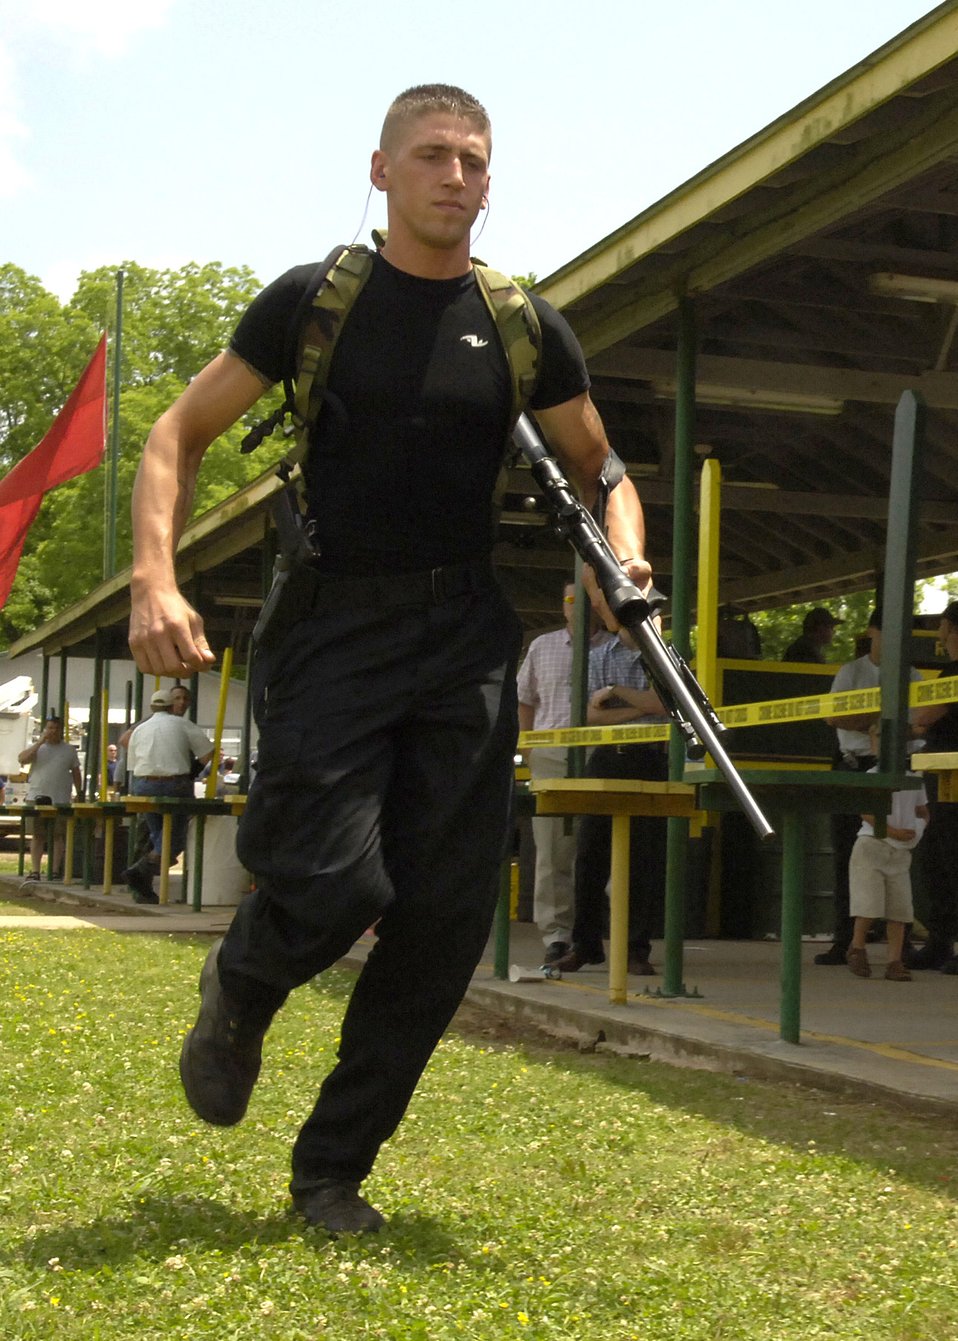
Security forces Airmen at SWAT competition

Staff Sgt. Lucas Gutowski proceeds to the sniper event during the Louisiana State SWAT Team Competition in Alexandria, La., on Tuesday, May 2, 2006. Sergeant Gutowski is with the 2nd Security Forces Squadron at Barksdale Air Force Base, La.